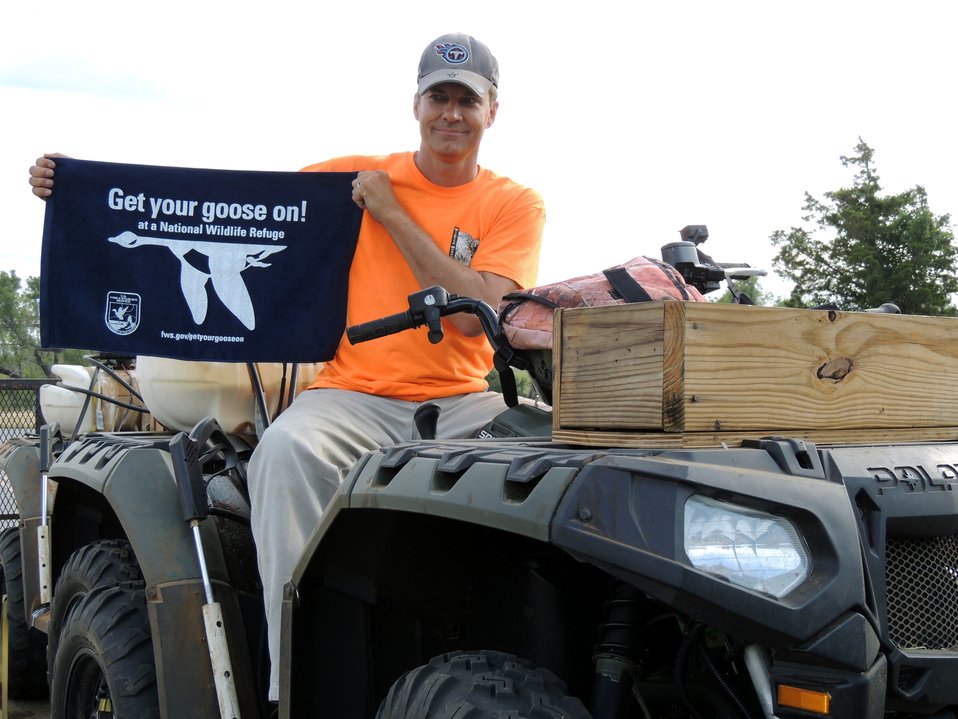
Get Your Goose On!

Wichita Mountains National Wildlife Refuge in Oklahoma.